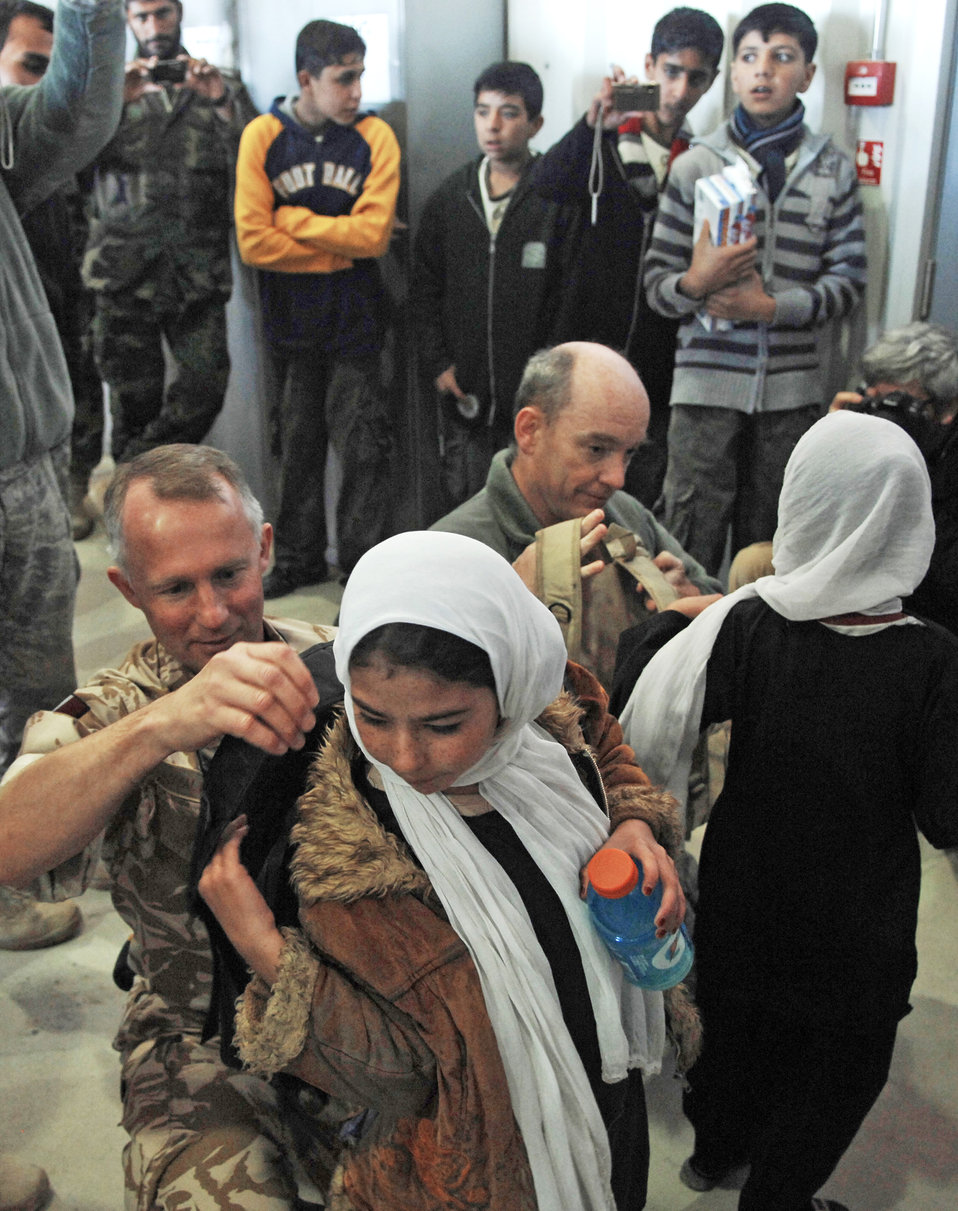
Afghan children visit Kandahar, see partnership between Afghans, coalition forces

Royal Air Force Air Commodore Malcolm Brecht assists a young girl with putting on a backpack filled with school supplies Dec. 31, 2009, during her visit to Kandahar Airfield, Afghanistan. Air Commodore Brecht is the commander of Kandahar Airfield.